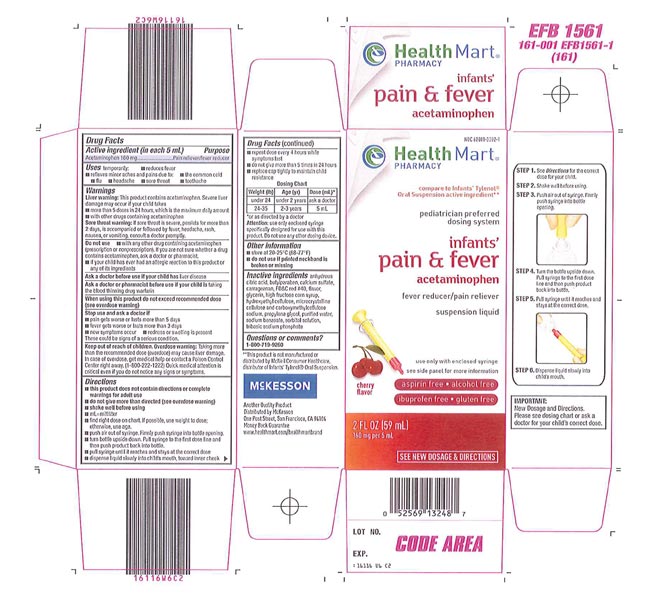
Recalled - Acetaminophen infant suspension liquid

November 1, 2013 – Product Recall – Perrigo Initiates Nationwide Voluntary Product Recall of Acetaminophen Infant Suspension Liquid, 160 Mg/5 Ml, Due to a Potential Defect with the Co-packaged Oral Syringe.